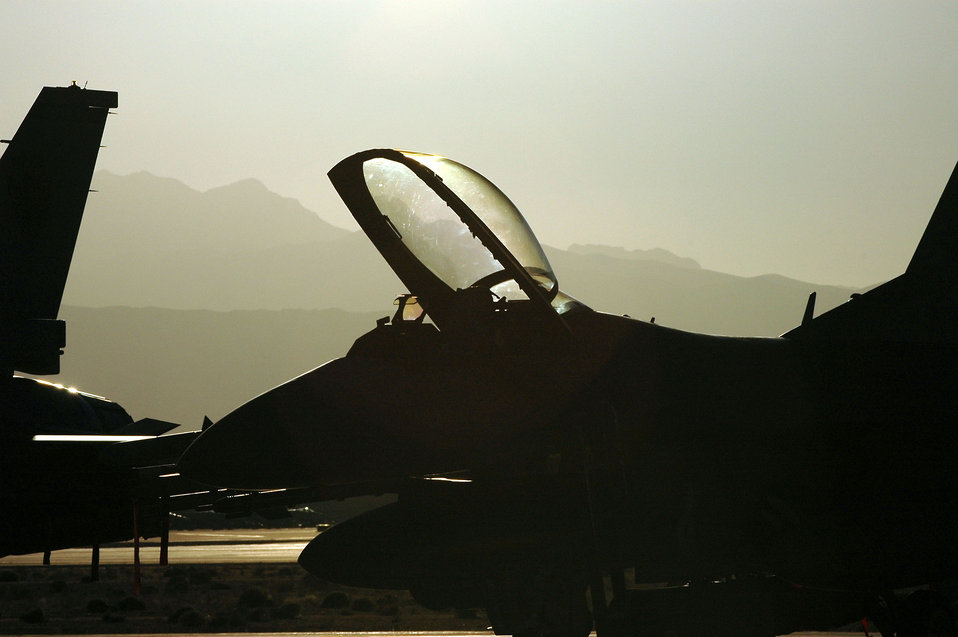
Red Flag

An F-16 Fighting Falcon from the Iowa Air National Guard's 132nd Fighter Wing sits ready during Red Flag 06-02 at Nellis Air Force Base, Nev., on Aug. 15. U.S. and coalition servicemembers are participating in the exercise that concludes today.